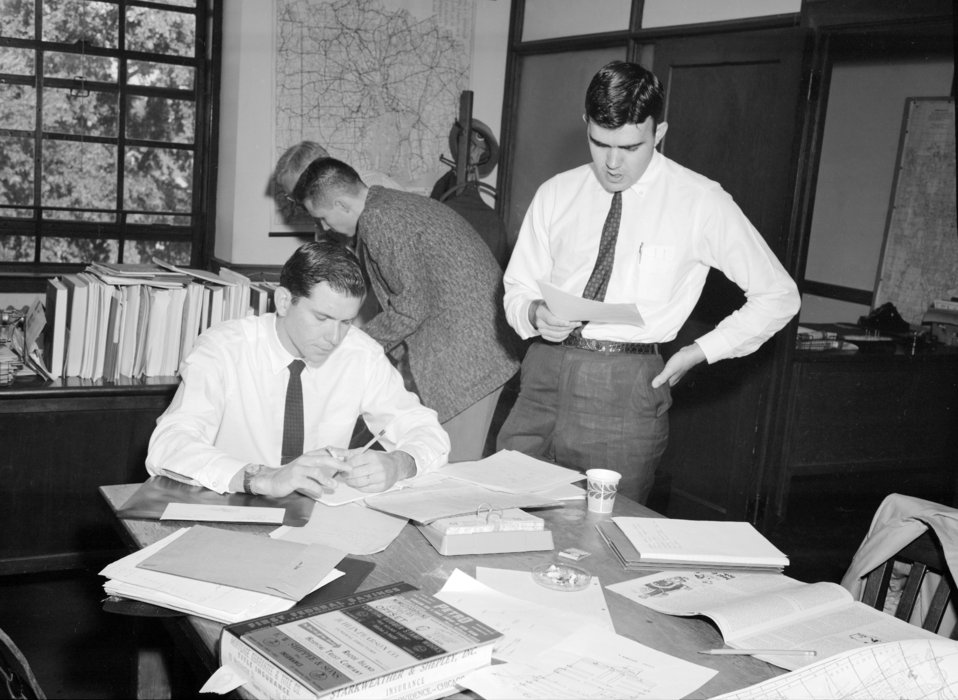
Officers from the Epidemic Intelligence Service, EIS, Polio Team, during the Rhode Island Polio Epidemic of the 1960s.